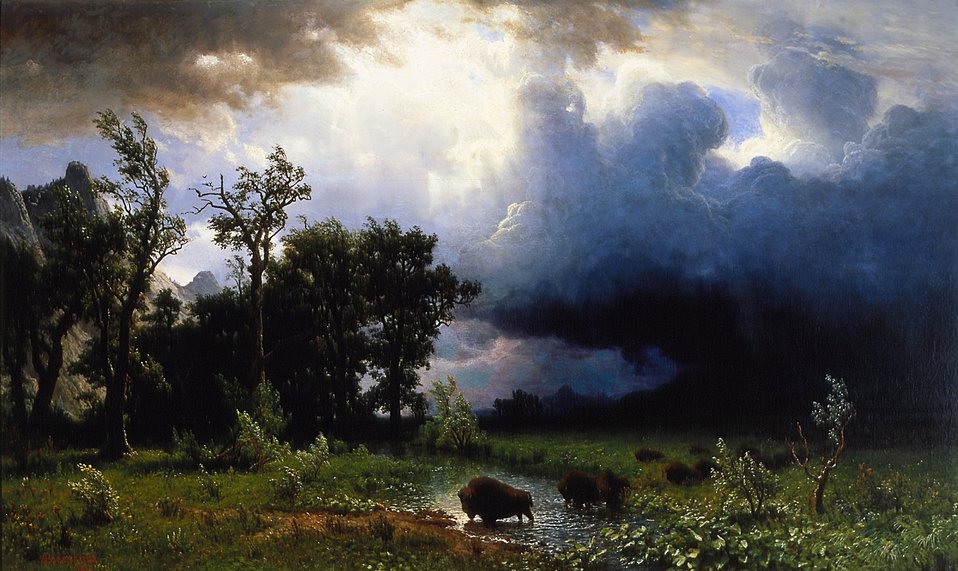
Albert Bierstadt - Buffalo Trail, The Impending Storm